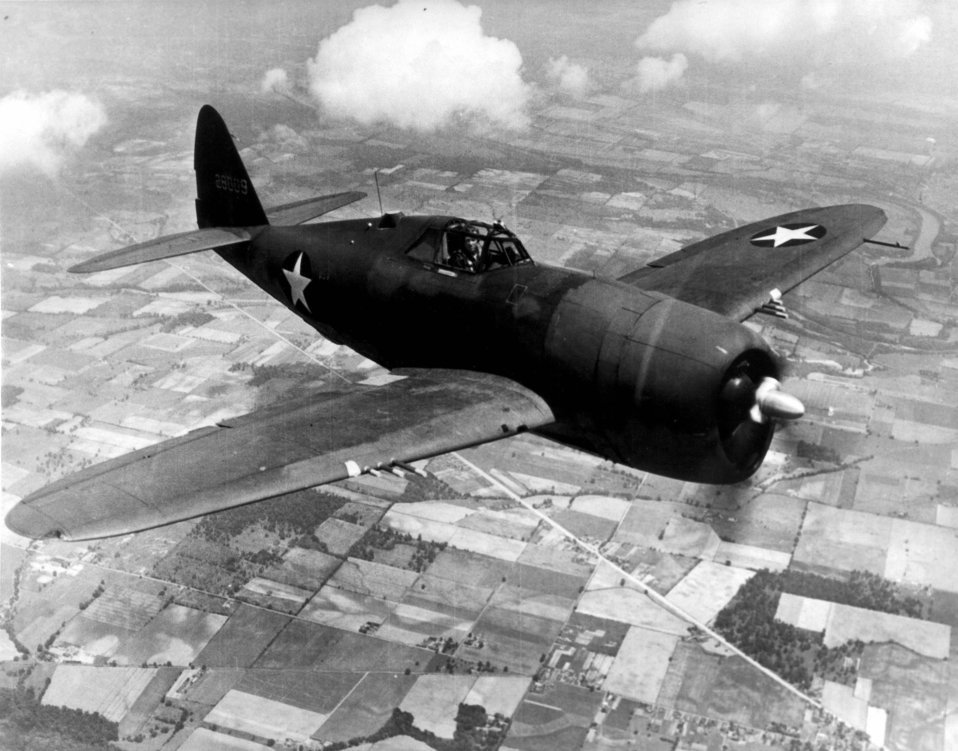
Republic P-47D Thunderbolt

1940's -- Republic P-47D Thunderbolt, nicknamed